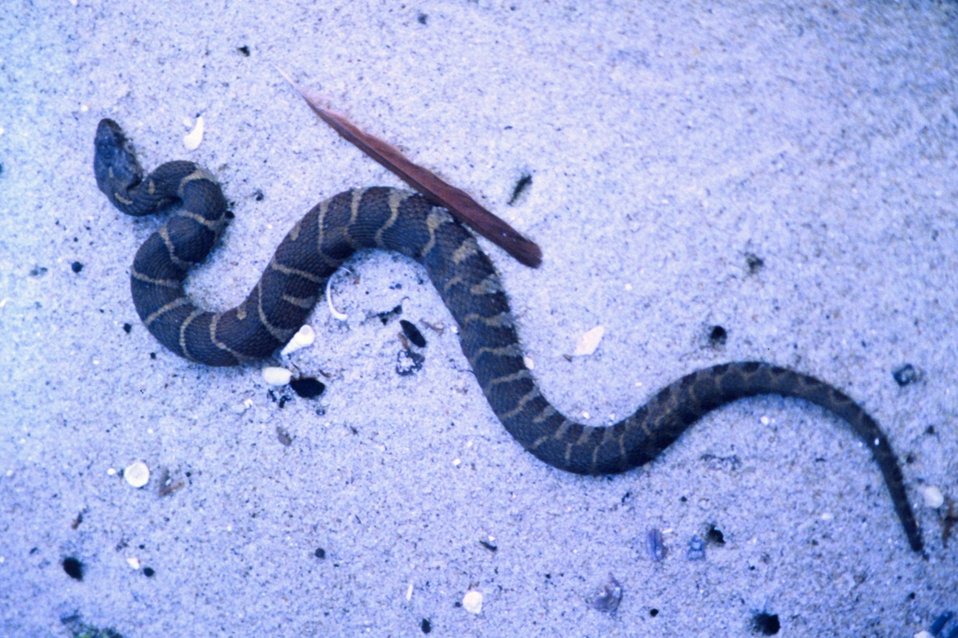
A young Northern Water Snake.